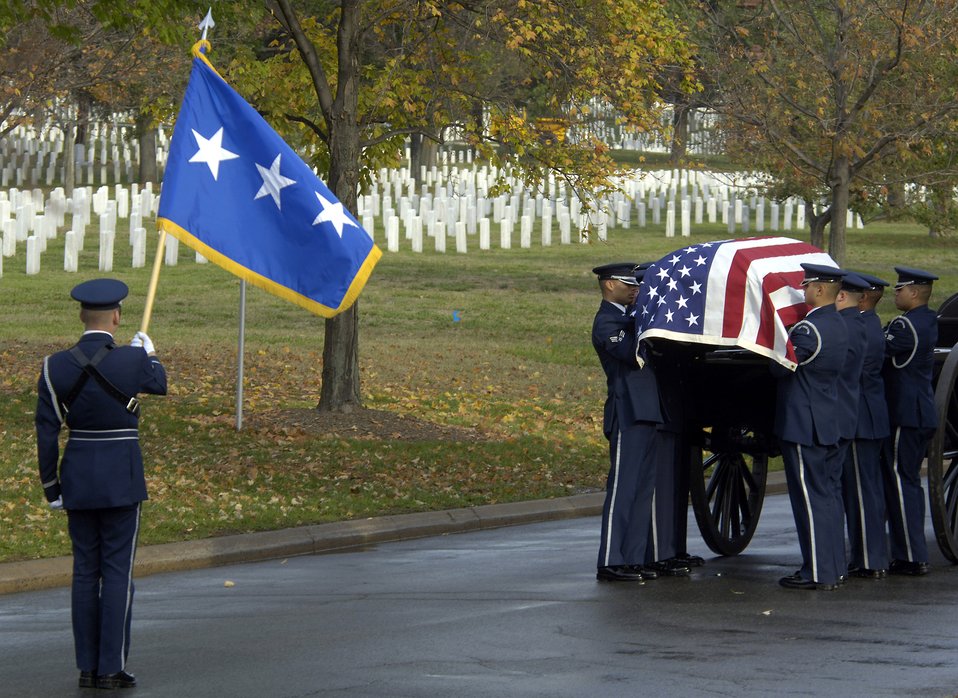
Honor guard transitions to new funeral guidelines

Airman 1st Class Michael Gibson (left) bears the personal colors as pall bearers lift the casket from a caisson during a military honors funeral ceremony Nov. 1 for retired Lt. Gen. Marvin McNickle at Arlington National Cemetery, Washington, D.C. Airman Gibson is a Air Force Honor Guardsman.